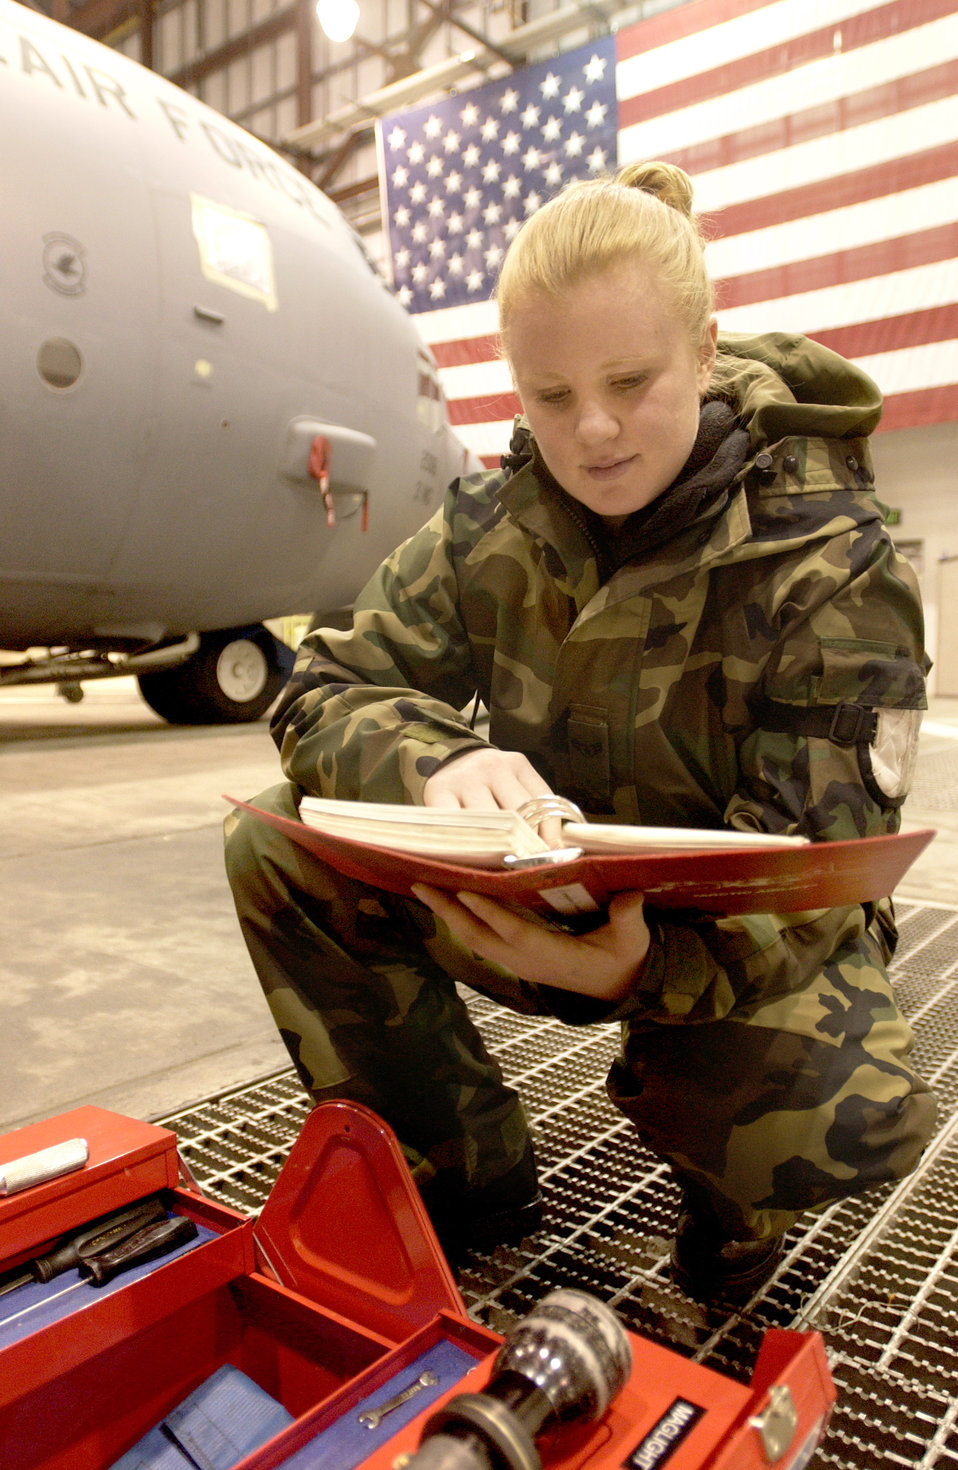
Winning ways

ELMENDORF AIR FORCE BASE, Alaska (AFPN) -- Airman 1st Class Stephanie Baker reviews a C-130 Hercules maintenance checklist. Airman Baker is assigned to the 703rd Maintenance Squadron which is part of the 3rd Maintenance Group here. The group recently won the 2003 Pacific Air Forces Clements McMullen Daedalian Weapon System Maintenance trophy for providing safe, serviceable and available equipment for sustained use in wartime and peacetime.